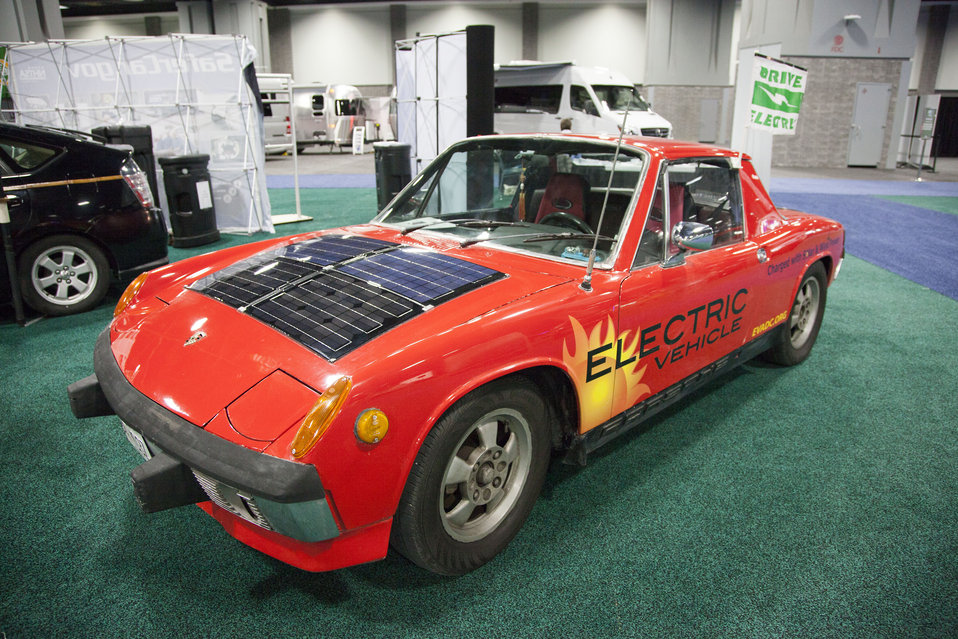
At the Washington Auto Show, the Electric Vehicle Association of Greater Washington, D.C. displayed some of its members’ vehicles, including this Porsche that is fitted with solar panels.